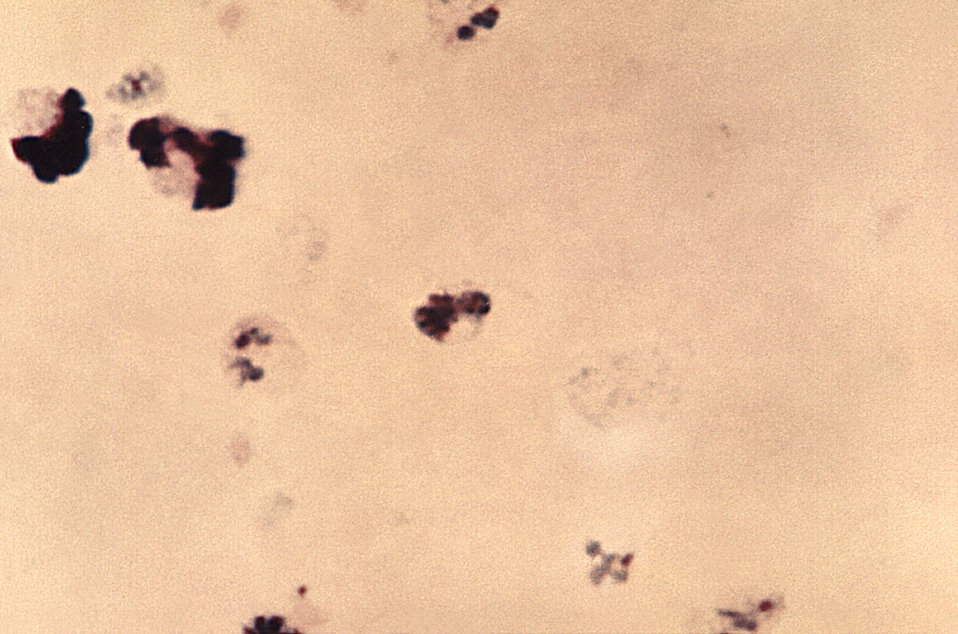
Magnified 1125X, this thick film photomicrograph revealed the presence of an immature Plasmodium vivax schizont containing a number of chromatin masses.